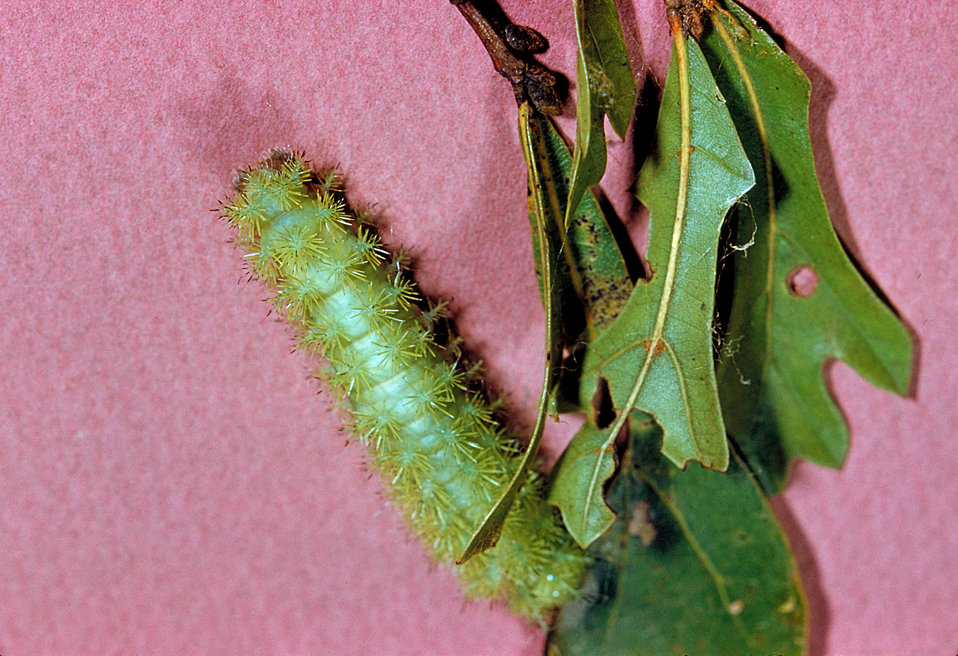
This is a photograph of the Saddleback caterpillar, Automeris io, with its characteristic poisonous urticarial hairs.